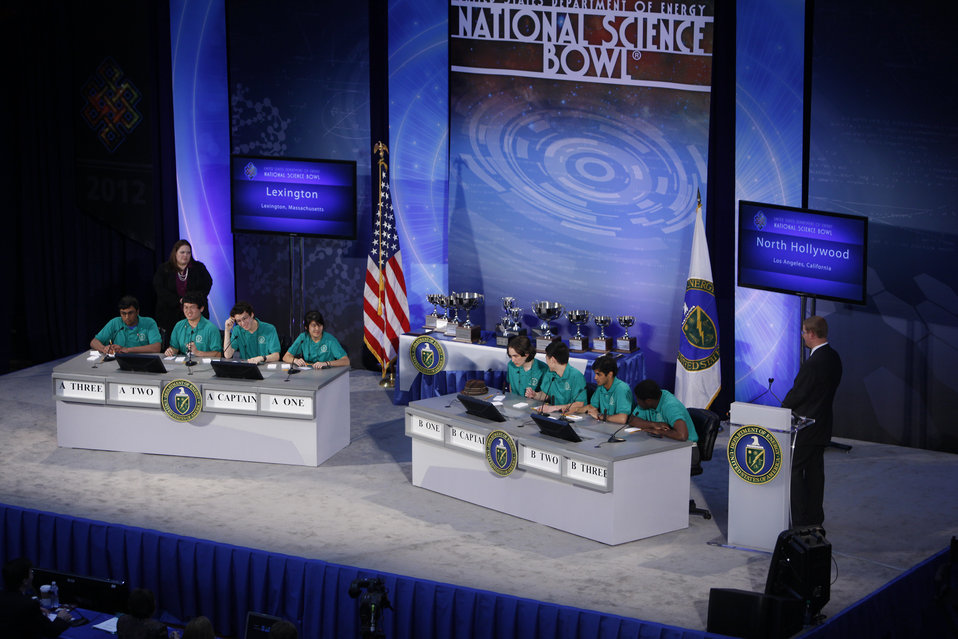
The final match at the U.S. Department of Energy National Science Bowl in Washington, DC on April 30, 2012.

DOE created the National Science Bowl in 1991 to encourage students to excel in mathematics and sciences and to pursue careers in these fields. The department supports mathematics and science education to help provide a technically trained and diverse workforce for the nation. More than 2000,000 students have participated in the National Sciences Bowl throughout its history.